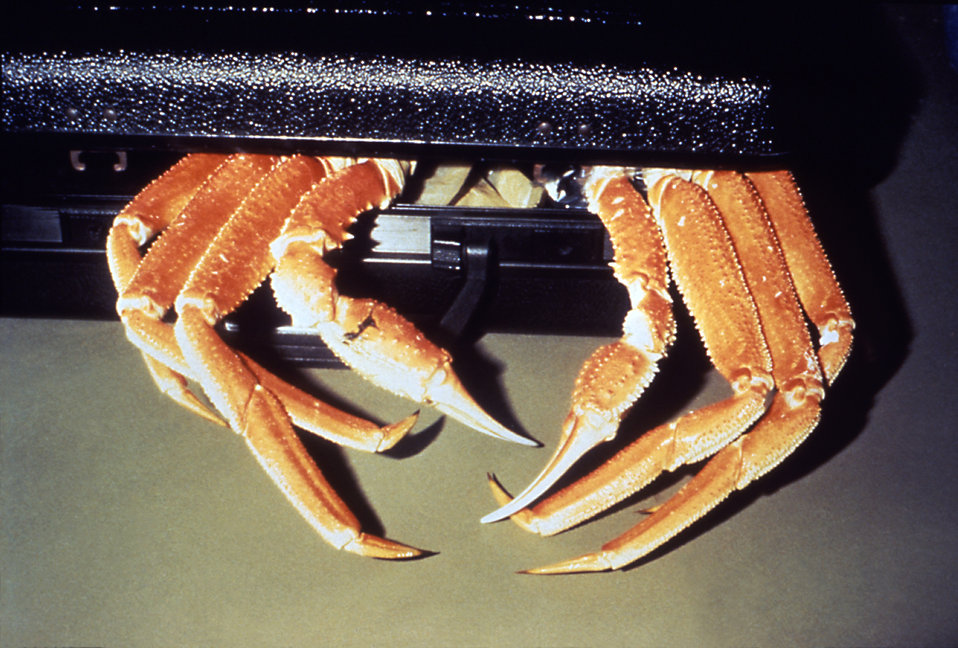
In 1991, 17 persons in the United States were infected with V. cholera related to travel to Latin America.